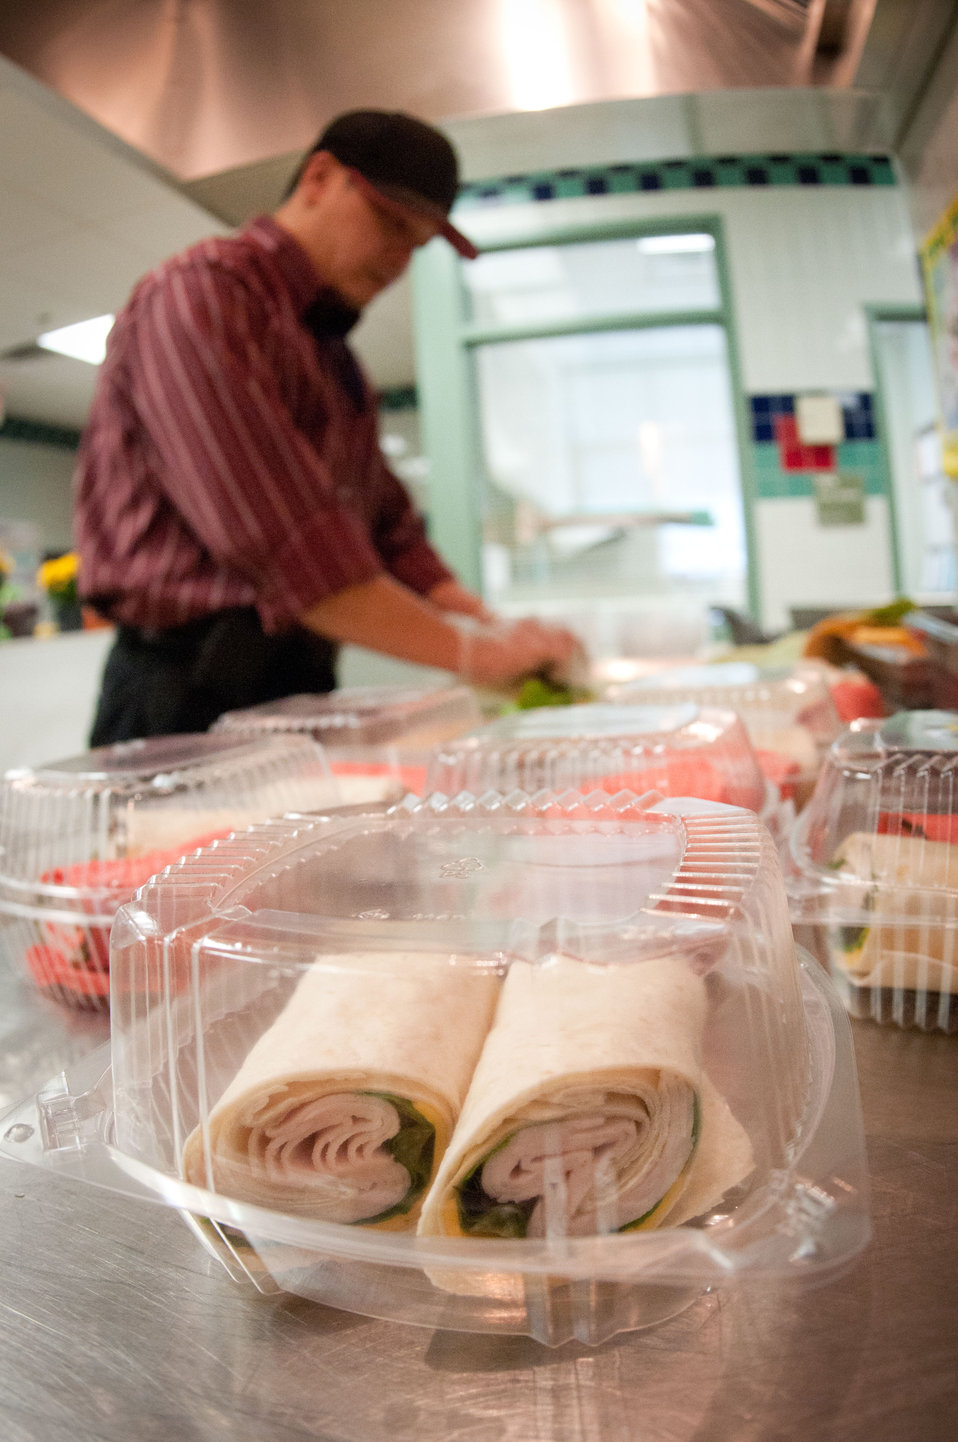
Arlington Public Schools, Food Services Specialist Thai Nguyen made Turkey Wraps on site for the school lunch program at Nottingham Elementary School in Arlington, VA, on Wednesday, October 12, 2011. Today's menu included roasted chicken, roasted butternut squash with dried cranberries, farm fresh mixed lettuce salad, turkey wraps, pita wedges, hot muffins, carrots, pears and more.